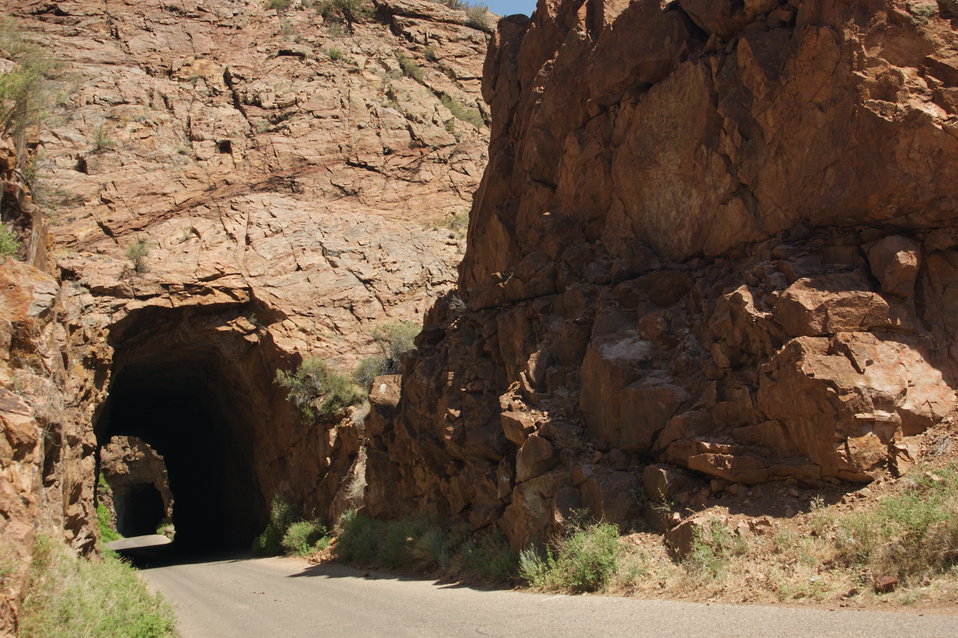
Lone Ranger Dilman Tunnel 3

The Gilman Tunnels in the Jemez Mountains of New Mexico was originally blasted out of the rock in the 1920s for a logging railroad and offer spectacular views of striking mesas.